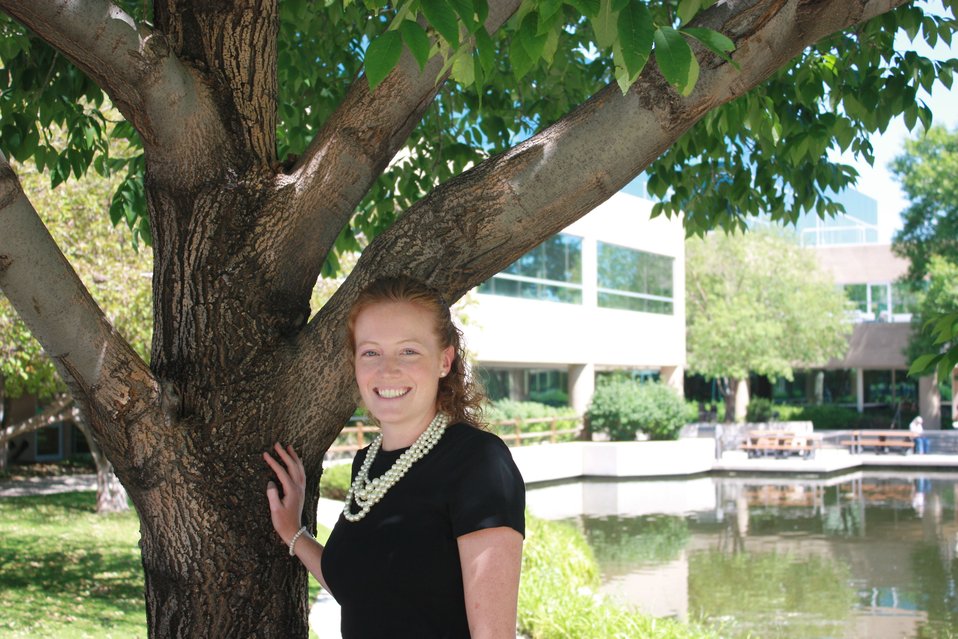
Anna Harris

Conserving the Future implementation coordinator, National Wildlife Refuge System